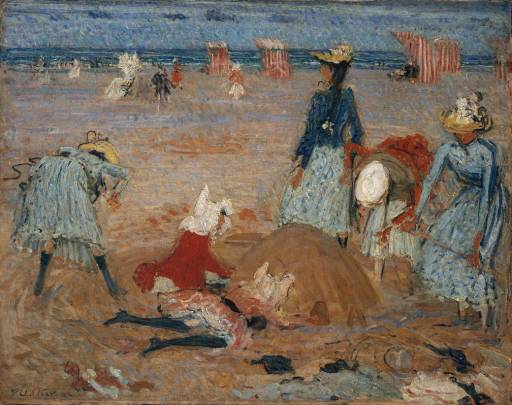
Boulogne Sands